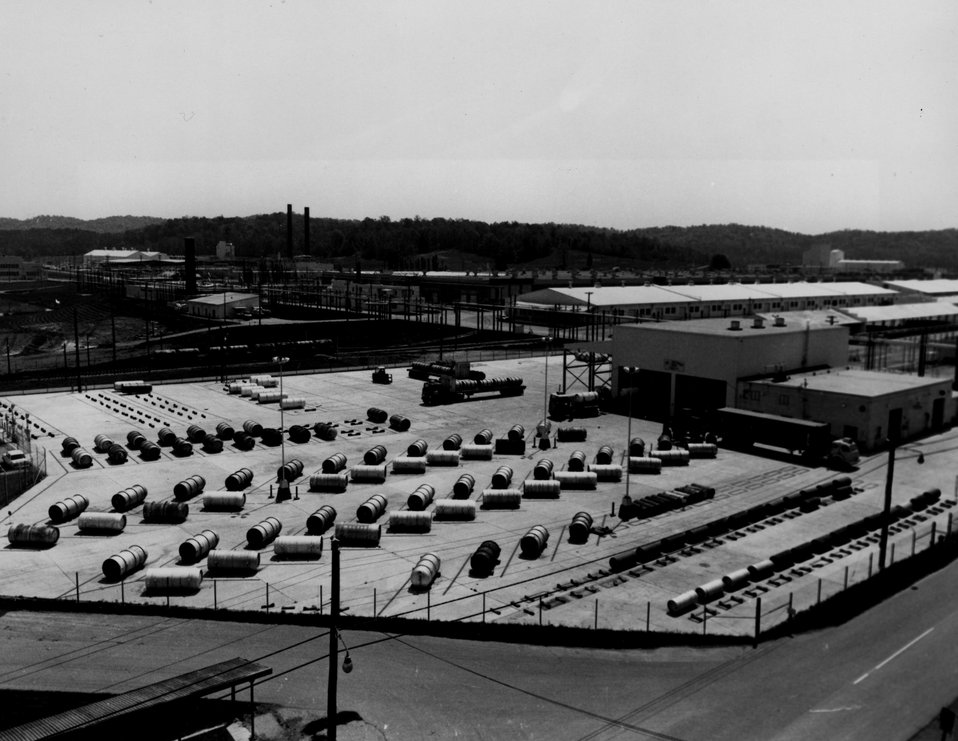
All uranium feed material for the Energy Research and Development Administration's Oak Ridge Gaseous Diffusion Plant is received at this site and all production is shipped from here. c. 1975